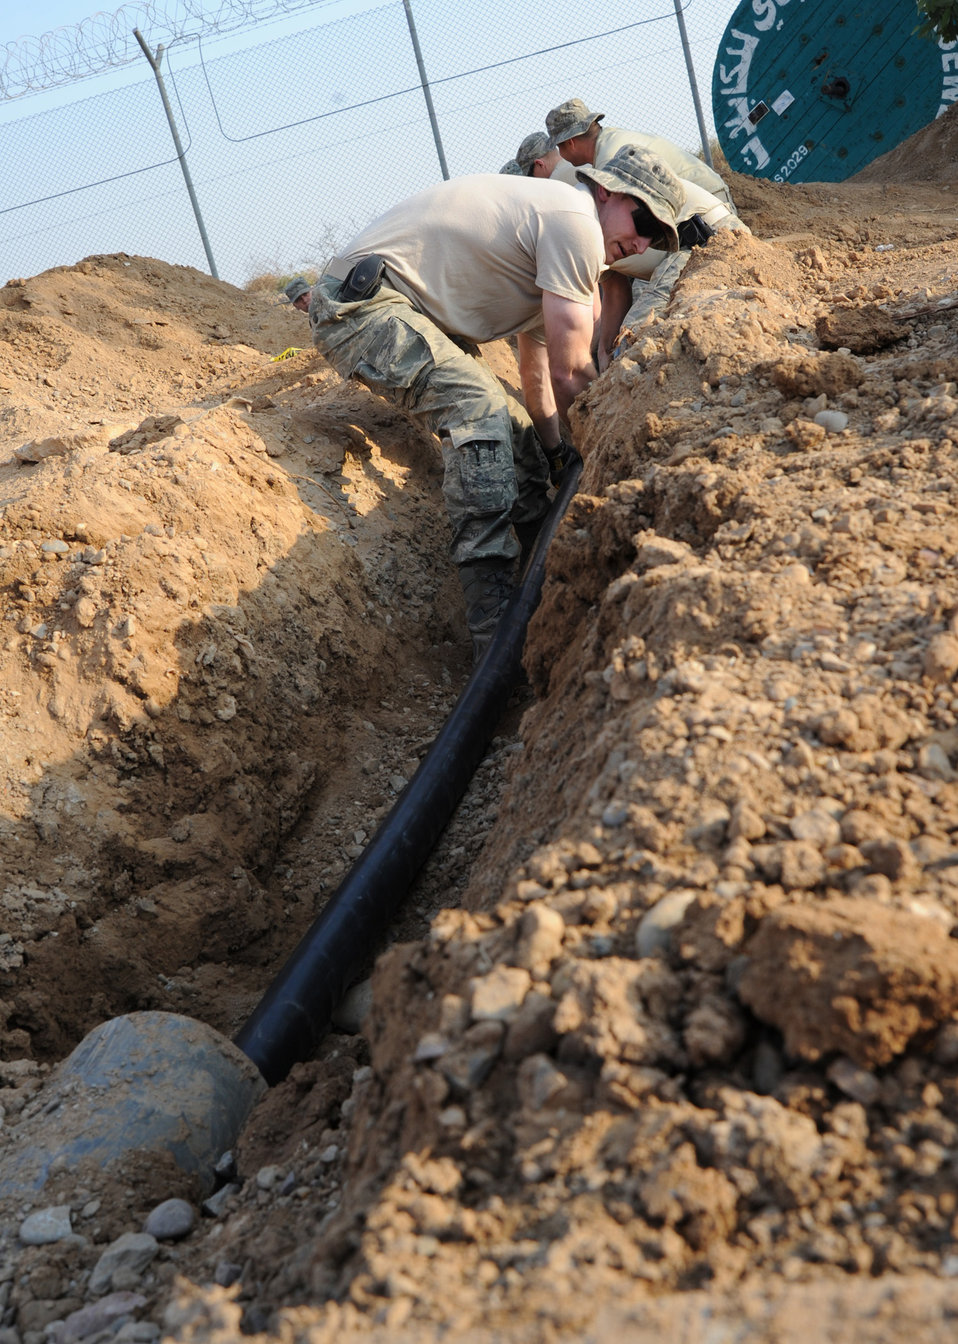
Civil engineers restore electricity

Senior Airman Curtis Raymond lays high-voltage power cable Jan. 6, 2011, at Joint Base Balad, Iraq. The cable will provide electricity for local villagers who were without power for more than 85 days. Airman Raymond is a 332nd Expeditionary Civil Engineer Squadron structural journeyman.